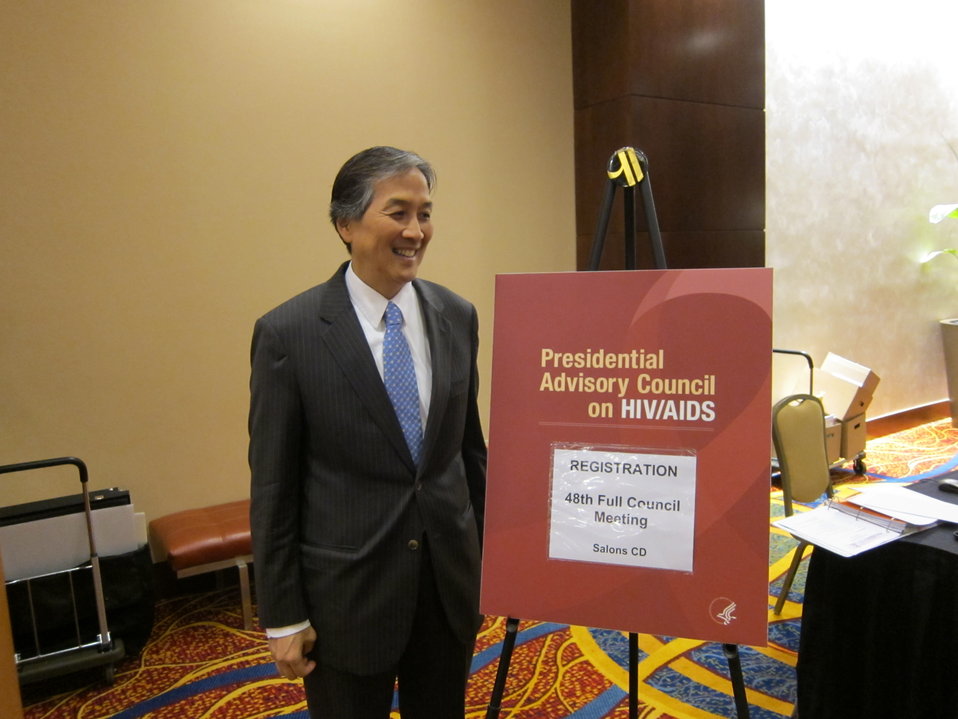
PACHA